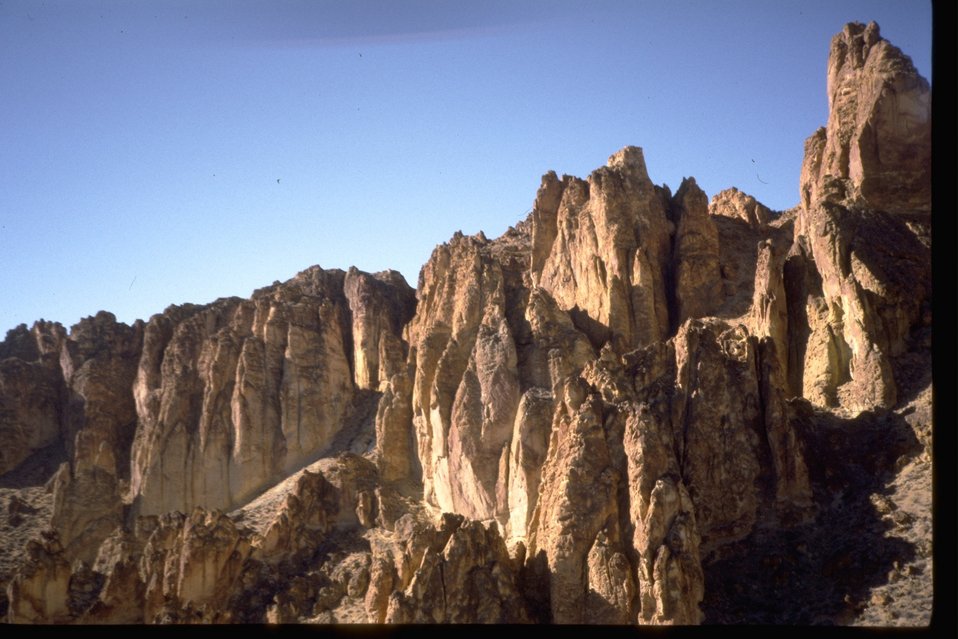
The rocky peaks of the Honeycombs Wilderness Study Area. OR 3-77A.